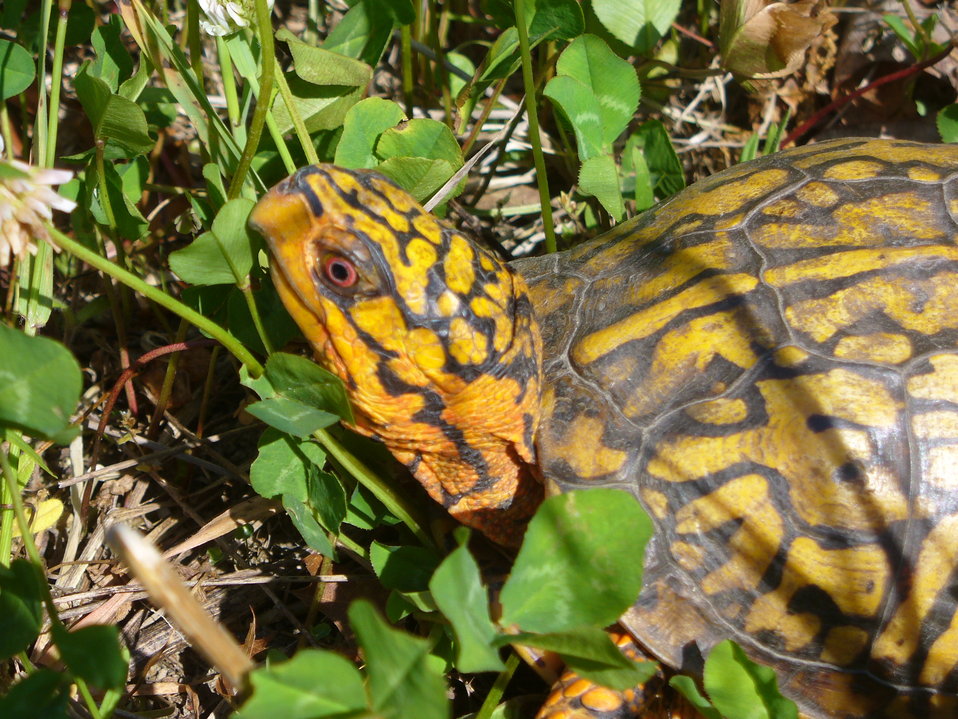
Box turtle

A box turtle at Sayville National Wildlife Refuge.